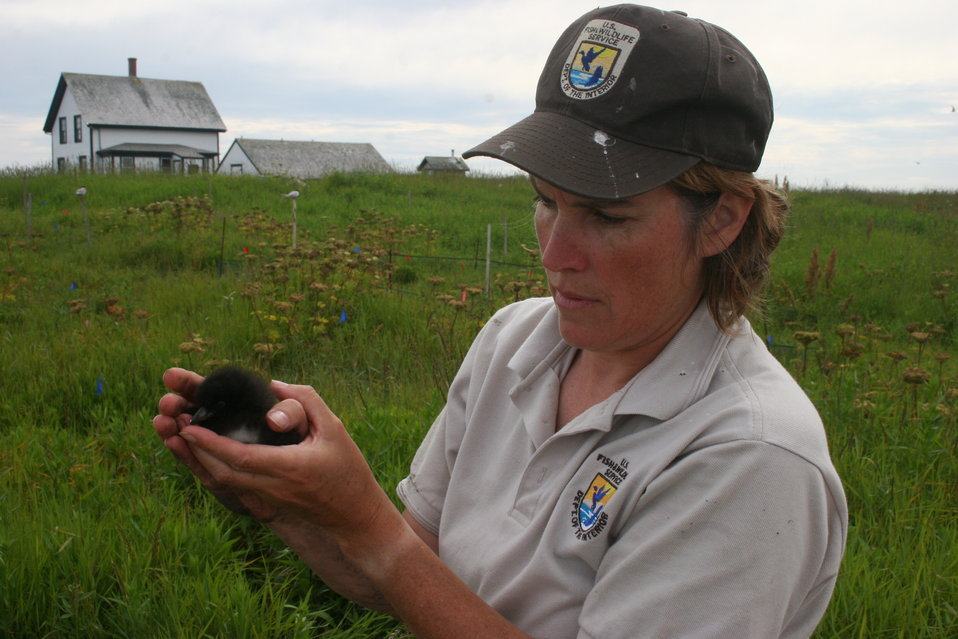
FWS Worker With Razorbill Chick